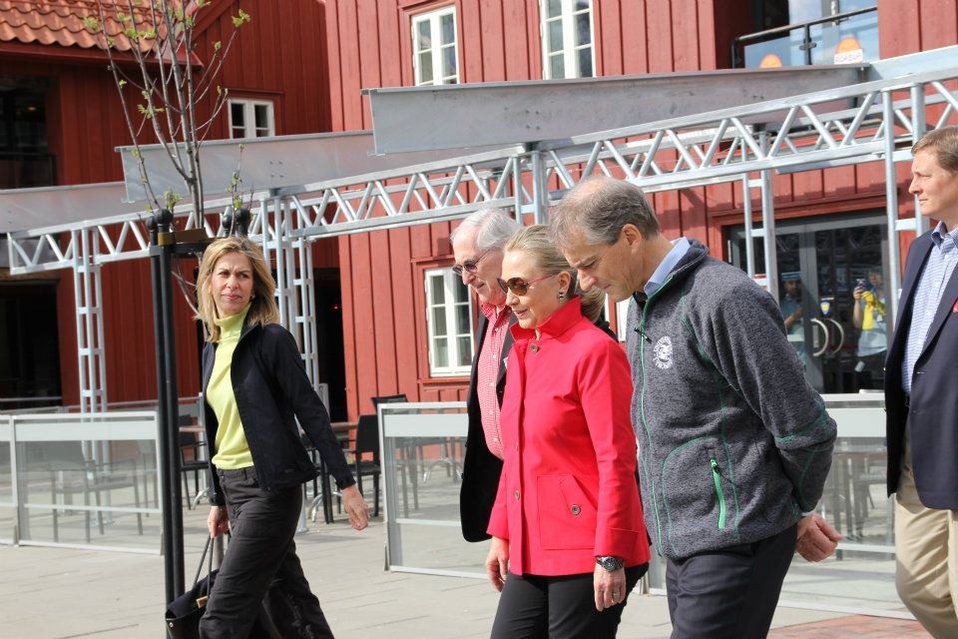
Secretary Clinton and Norwegian Foreign Minister Store Participate in an Arctic Research Vessel Tour

U.S. Secretary of State Hillary Rodham Clinton and Norwegian Foreign Minister Jonas Gahr Store participate in an Arctic research vessel tour in Tromso, Norway, on June 2, 2012.